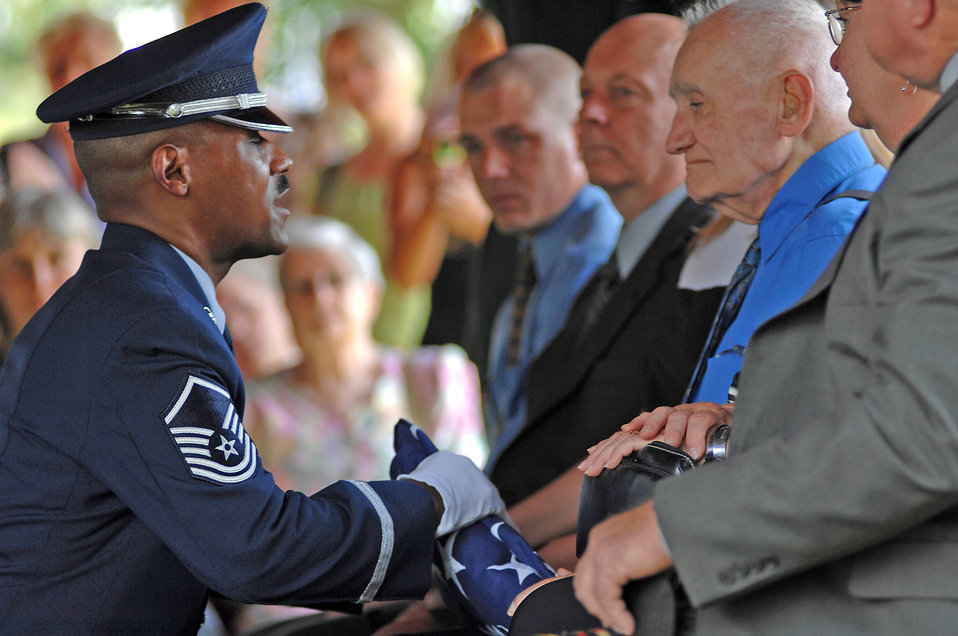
War hero brought home, laid to rest after 40 years MIA

Master Sgt. Gregory Giles presents a folded U.S. flag to Kenneth Adam, father of Chief Master Sgt. Quincy Adam, at Chapel Hill Memorial Cemetery, July 27. Chief Adam is a Vietnam War veteran who was missing in action for more than 40 years. Chief Adam's remains were discovered in Southeast Asia, and he was finally brought home to be laid to rest, giving his family closure in their lives. Sergeant Giles is the Whiteman Air Force Base Honor Guard senior leader.